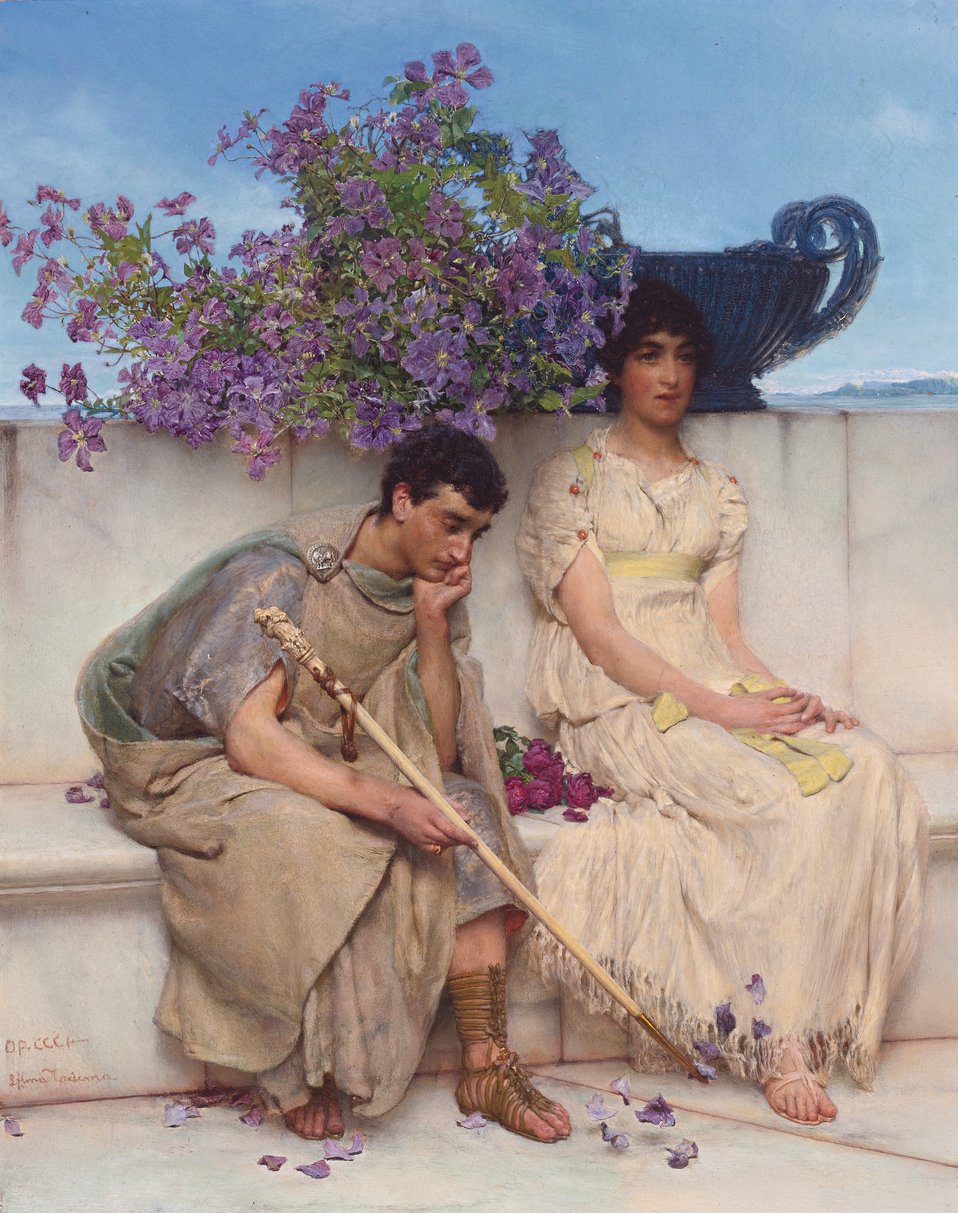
An eloquent silence, by Lawrence Alma-Tadema